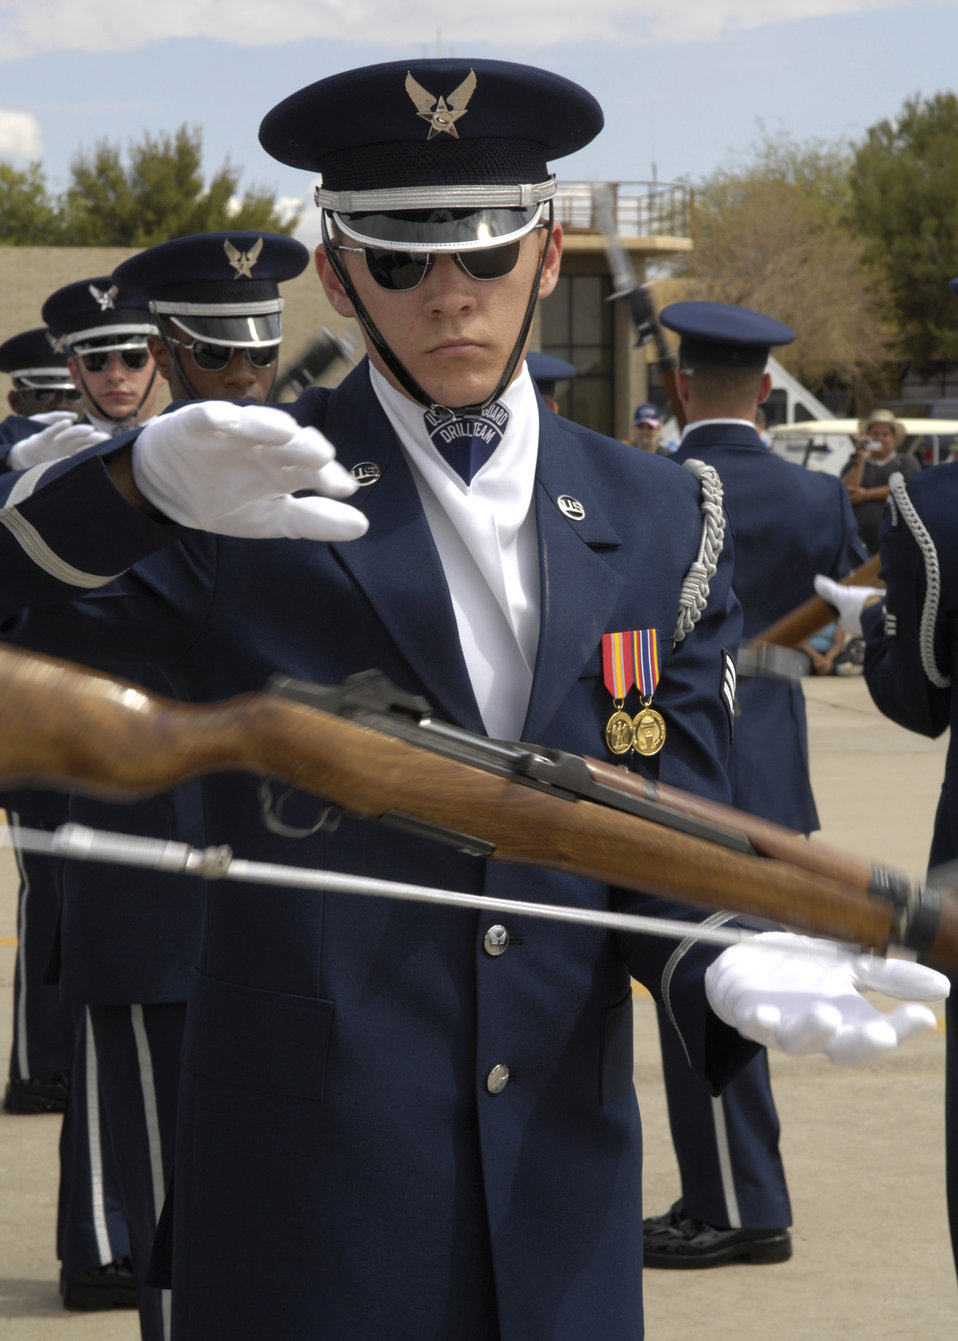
Showcasing the mission

Senior Airman Jason Martin, of the United States Air Force Honor Guard Drill Team, performs March 24 during the air show at Luke Air Force Base, Ariz. The drill team is the traveling component of the Air Force Honor Guard and tours Air Force bases worldwide showcasing the precision of today's Air Force to recruit, retain and inspire Airmen for the Air Force mission.